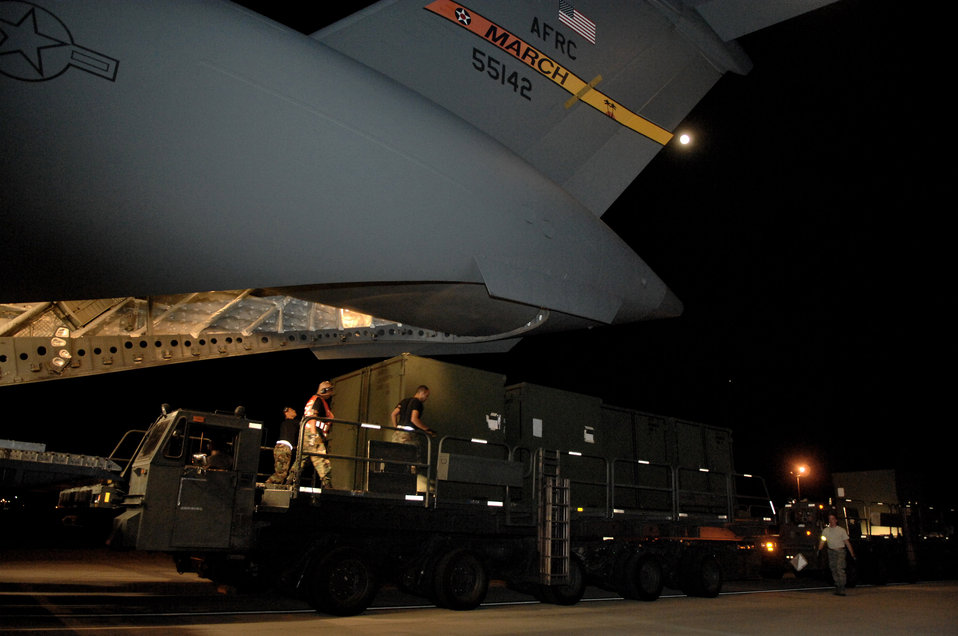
Airmen deliver firefighting support

Members of the 452nd Air Mobility Wing stationed at March Air Reserve Base in California assist Soldiers from the U.S. Army North from Fort Sam Houston in San Antonio unload emergency response equipment from a C-17 Globemaster III Oct. 24 at March ARB. Soldiers from U.S. Army North are assisting with Southern California wildfires by managing and aiding all the Defense Department forces involved.